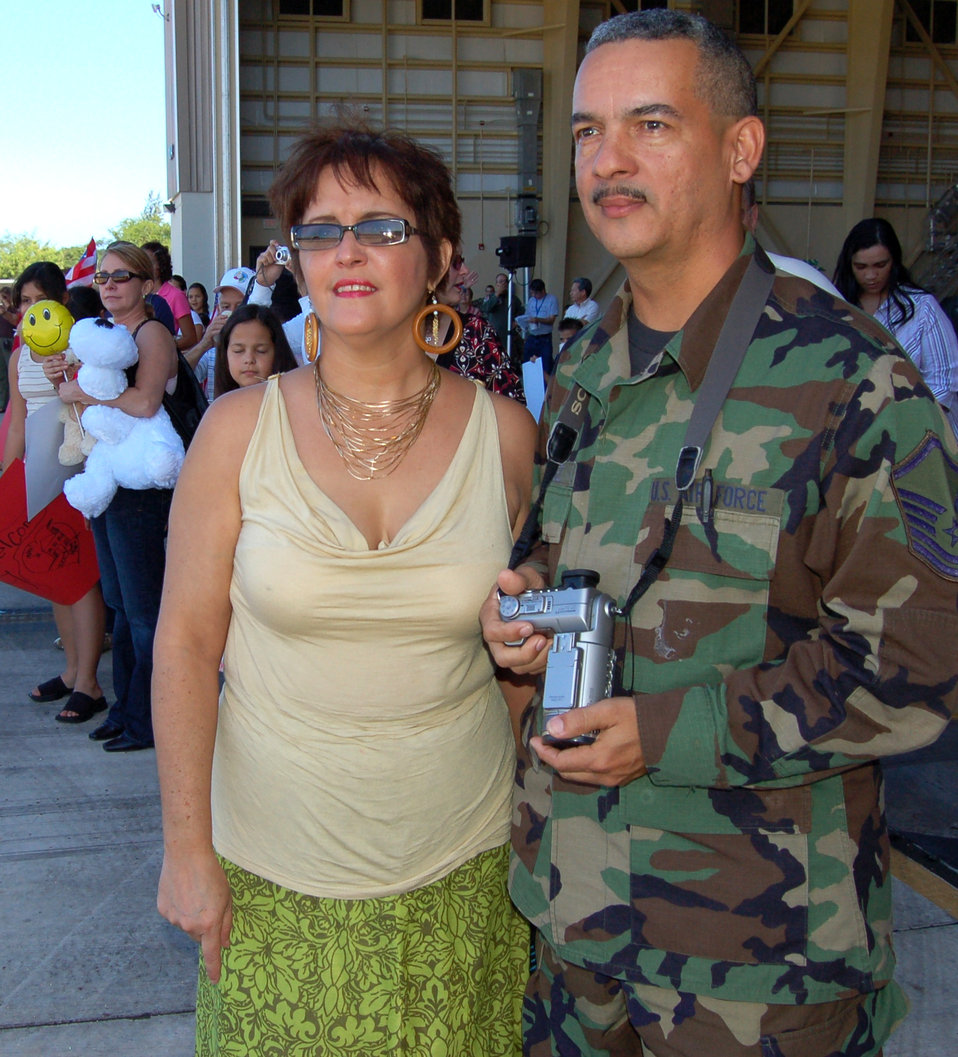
Buccaneers Return Home

Master Sgt. Diego Vazquez and his wife, Milly, wait for Airmen from the 198th Airlift Squadron to arrive at Mu√±iz Air National Guard Base, Puerto Rico, Dec. 16. The 156th Airlift Wing NCO in charge of finance also helped in-process the 26 Airmen who returned from a deployment to Bagram Air Base, Afghanistan. The wing is with the Puerto Rico Air National Guard.